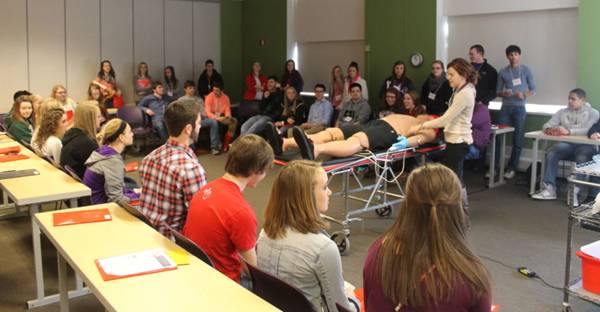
Students from Southern Ohio high schools met at Center of Science and Industry (COSI) to learn about prescription drug misuse and abuse. This event kicked off a partnership with Ohio State University College of Pharmacy students.